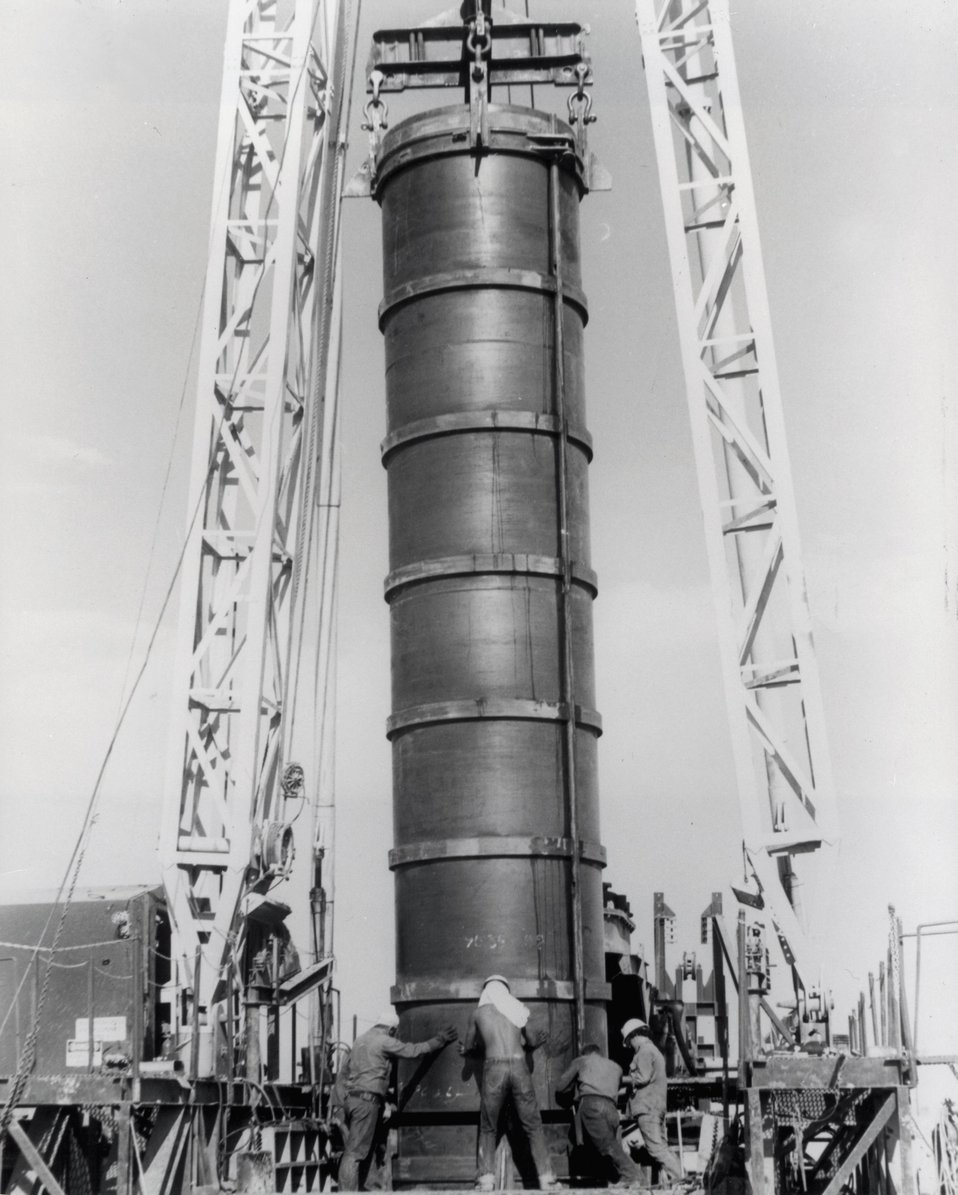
A 30-foot length of heavy reinforced mine shaft casting is set into place for welding to the next section and lowering into the bored big hole. This is a Telton Exploration Drilling Co. 'big hole'. c. 1976